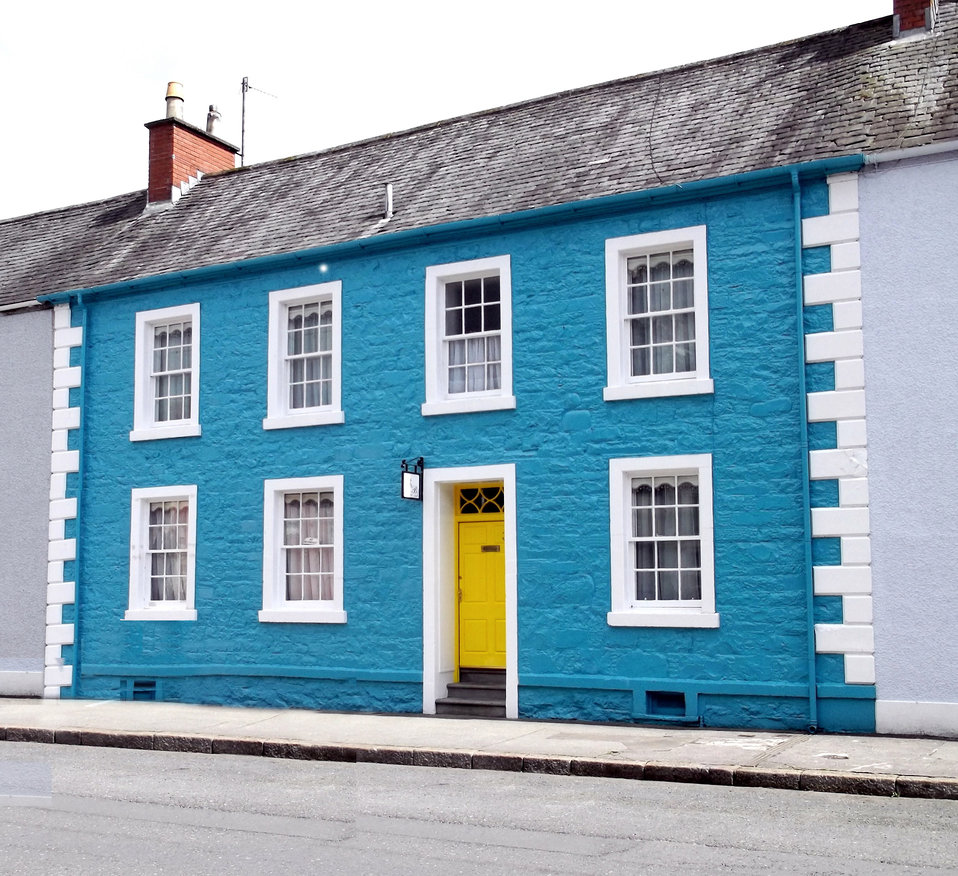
Colourful house

Evening sunset.